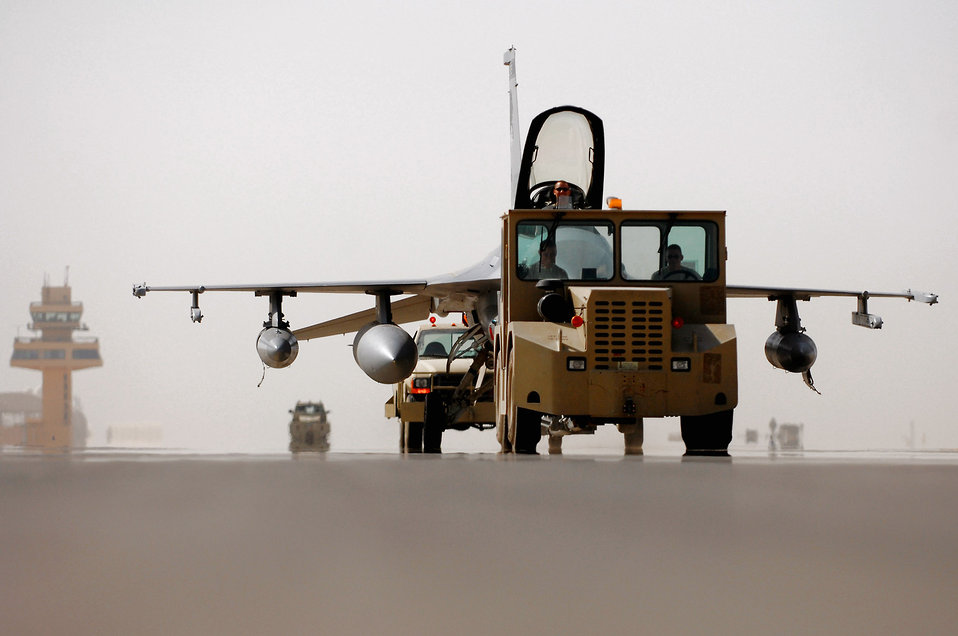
The changing of the Guard

Members of the Iowa and the Wisconsin Air National Guard, assigned to the 332nd Expeditionary Aircraft Maintenance Squadron at Balad Air Base, Iraq, tow an F-16 Fighting Falcon to a hardened aircraft shelter June 13. Aircraft and personnel from Iowa and Wisconsin Air National Guard units will return to the U.S., after being in Iraq for four months. F-16s and Airmen from South Dakota and New York ANG units have arrived at Balad to take their places. Rotating fighters helps reduce the amount of time the aircraft are exposed to the hot and dusty weather of Iraq, which can wreak havoc on the planes' components.